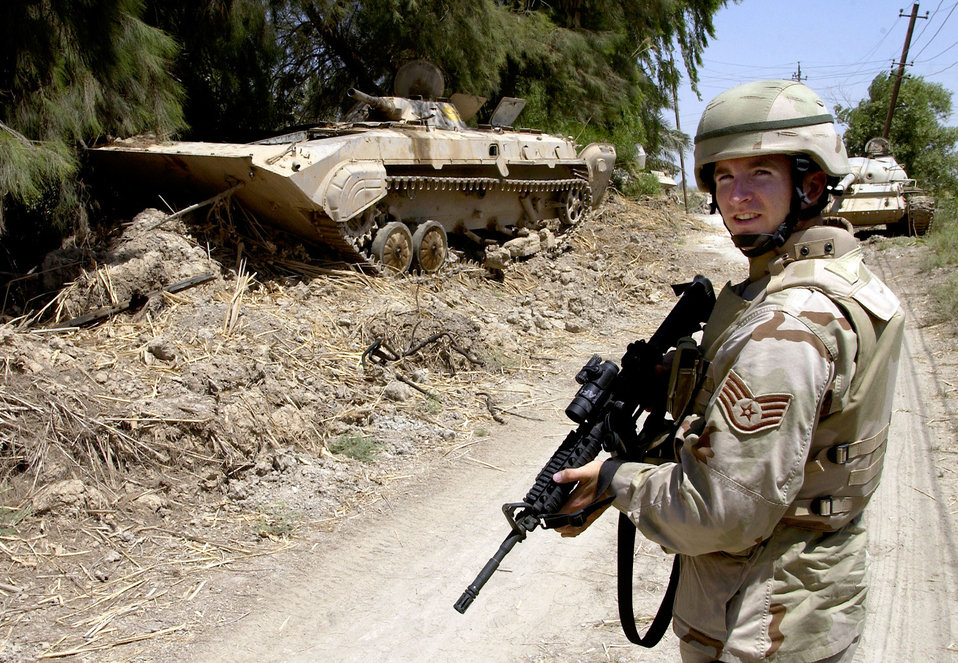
APC wreck

OPERATION IRAQI FREEDOM -- Staff Sgt. Brandon Storey secures a road next to a destroyed Iraqi armored-personnel carrier during a training mission near Baghdad, Iraq. Storey is a forward air controller with the 1st Expeditionary Air Operations Support Squadron. He is deployed from the 1st Air Operations Support Squadron at Baumholder, Germany.